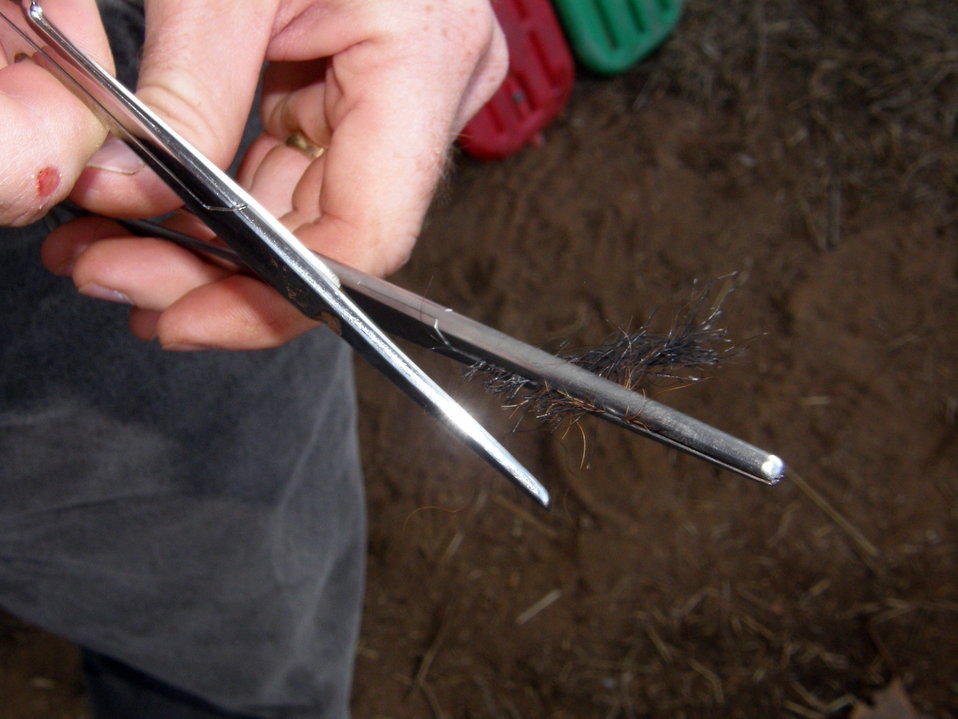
Bison Genetic Conservation

Bison tail hair sample collected at roundup for genetic analysis. Genetic testing is an important tool we use for USFWS bison metapopulation management. Our goal is to preserve genetic diversity while minimizing cattle gene introgression in our herds.